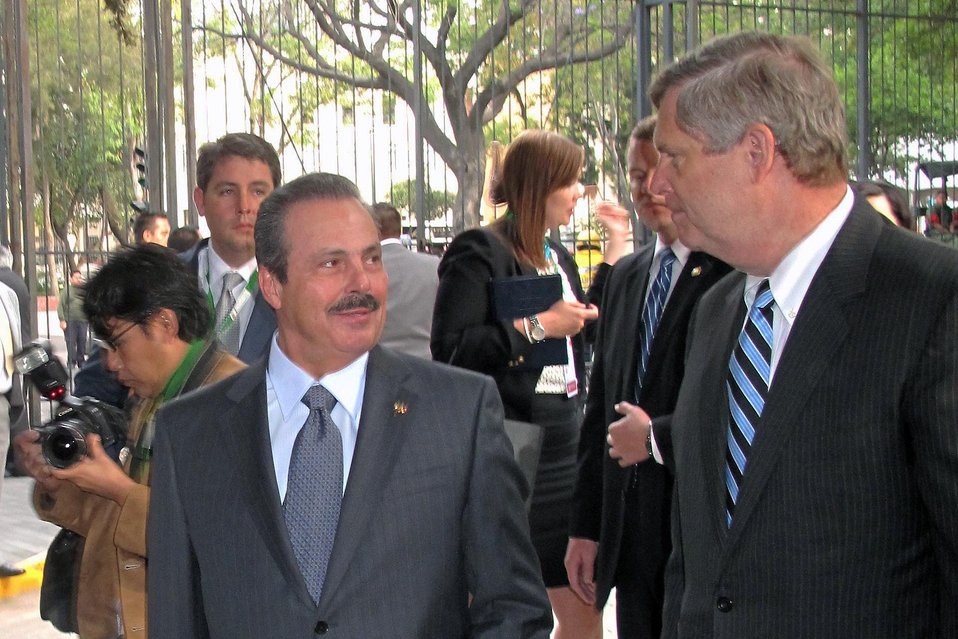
Mexico Secretary of Agriculture, Livestock, Rural Development, Fisheries and Food (SAGARPA) Martinez y Martinez and Agriculture Secretary Tom Vilsack enter the 2014 Mexican Global Forum on Agricultural Expectations in Mexico City, Mexico, on Monday, May 19, 2014.